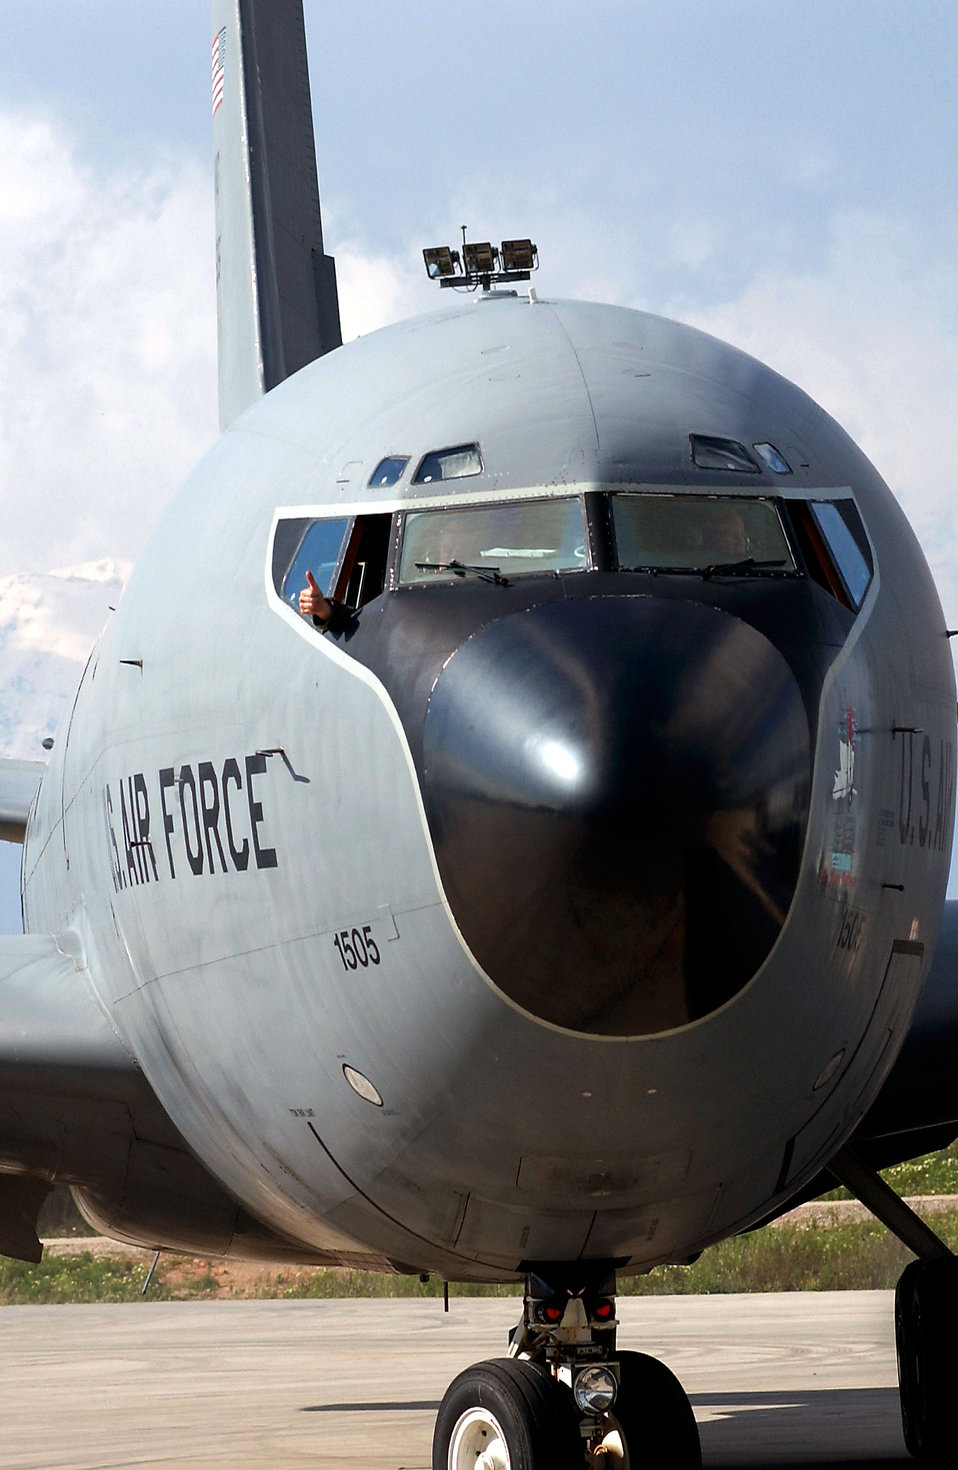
Stratotanker up close

OPERATION IRAQI FREEDOM -- Capt. Don Macintyre, a copilot assigned to the 398th Air Expeditionary Group, is ready for take-off in a KC-135 Stratotanker from a forward deployed operating base located in the Mediterranean region in support of Operation Iraqi Freedom, April 7, 2003. Operation Iraqi Freedom is the multi-national coalition effort to liberate the Iraqi people, eliminate Iraq's weapons of mass destruction, and end the regime of Saddam Hussein.